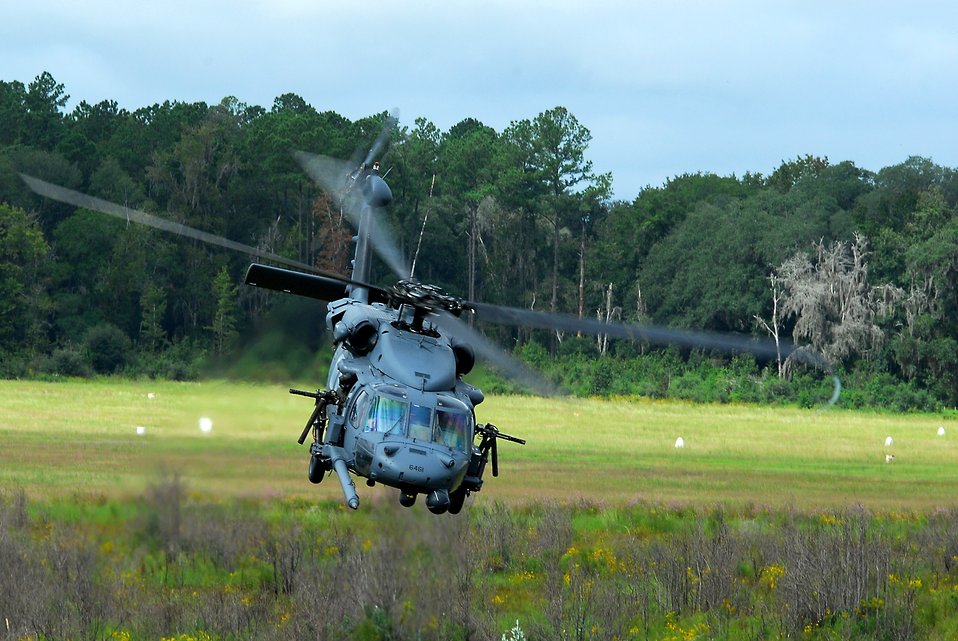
Combat search and rescue training

An HH-60G Pave Hawk from the 41st Rescue Squadron banks out of a landing zone after retrieving a simulated downed aviator during a combat search and rescue demonstration at Moody Air Force Base, Ga., Oct. 4. The multi-unit demonstration highlighted the CSAR capabilities of pararescuemen from the 38th RQS, Pave Hawks, A-10 Thunderbolt II close-air support fighters and HC-130P Combat King search and rescue aircraft.